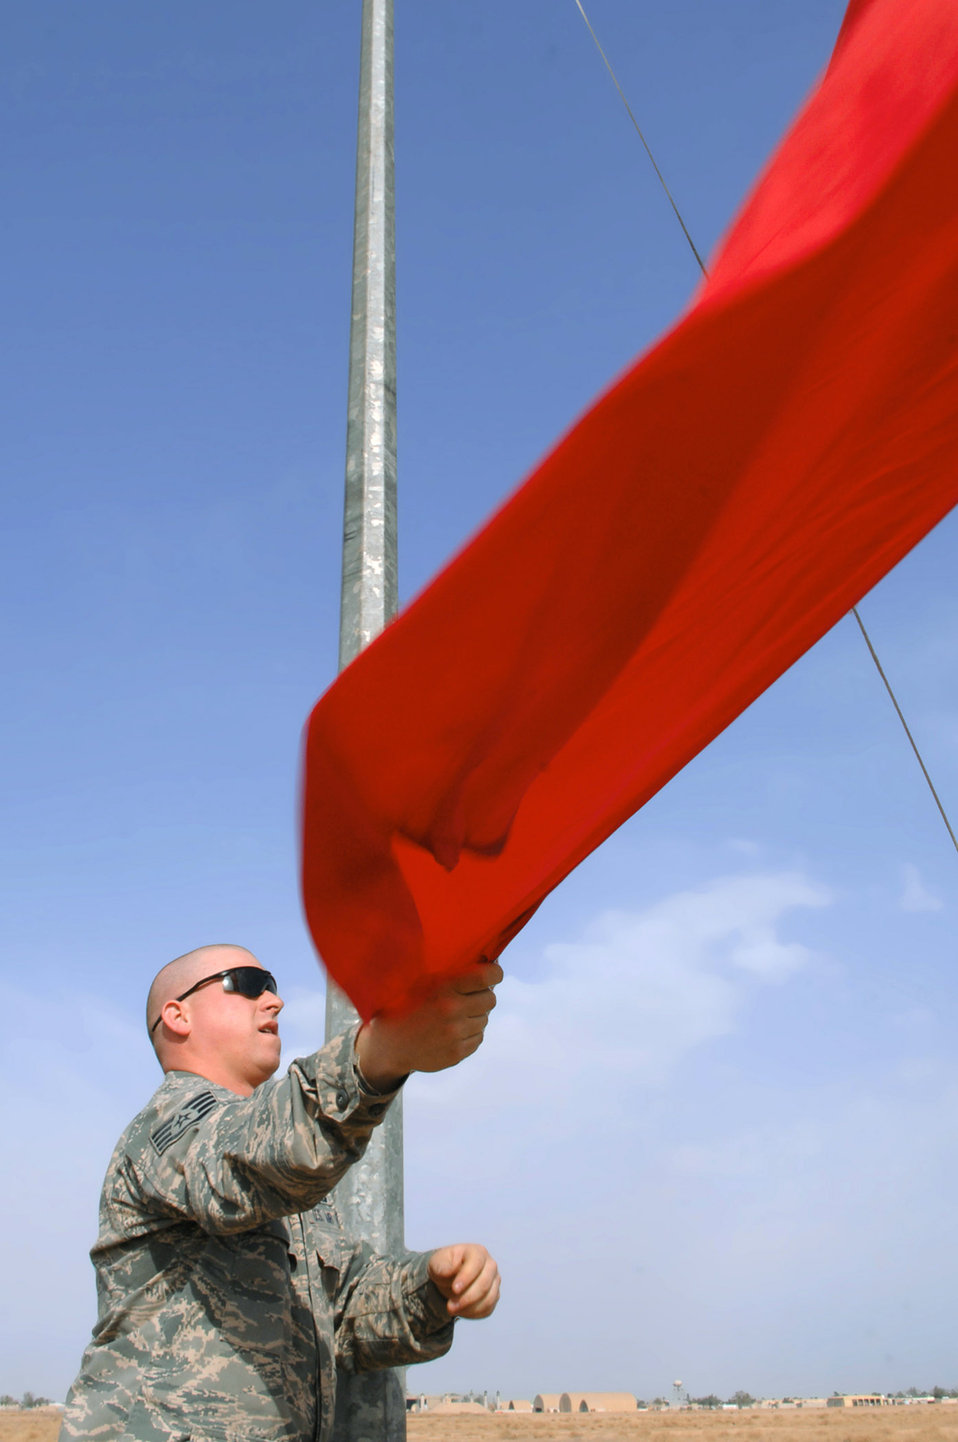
Blast off

Staff Sgt. Jason Kreider raises a red flag March 13 at Balad Air Base, Iraq. The flag signifies that the ordnance range has become active and that personnel should keep out. Sergeant Kreider is a 332nd Expeditionary Civil Engineer Squadron explosive ordnance disposal technician deployed from Fort Dix, N.J.